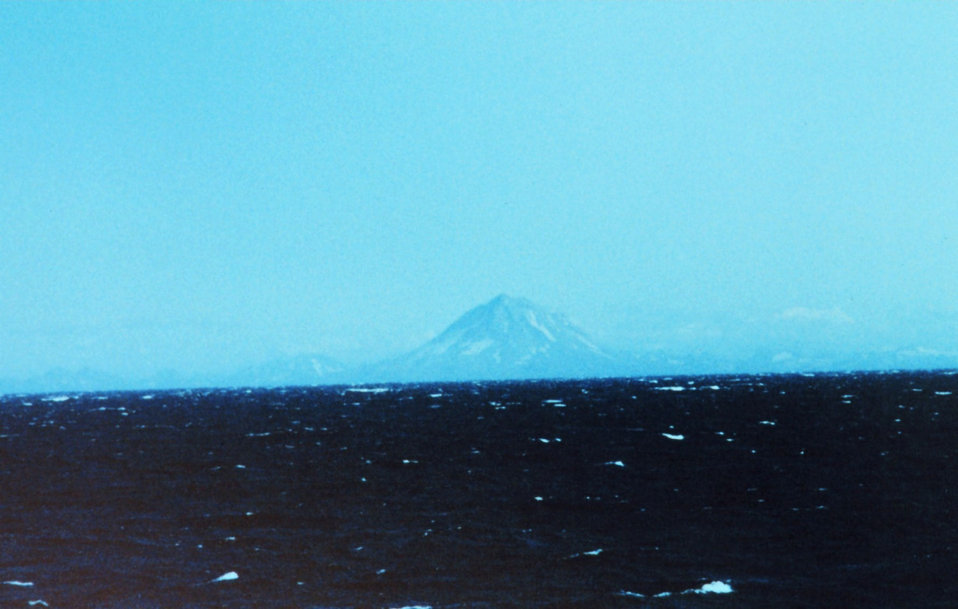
Cape Douglas at the southwest end of Cook Inlet